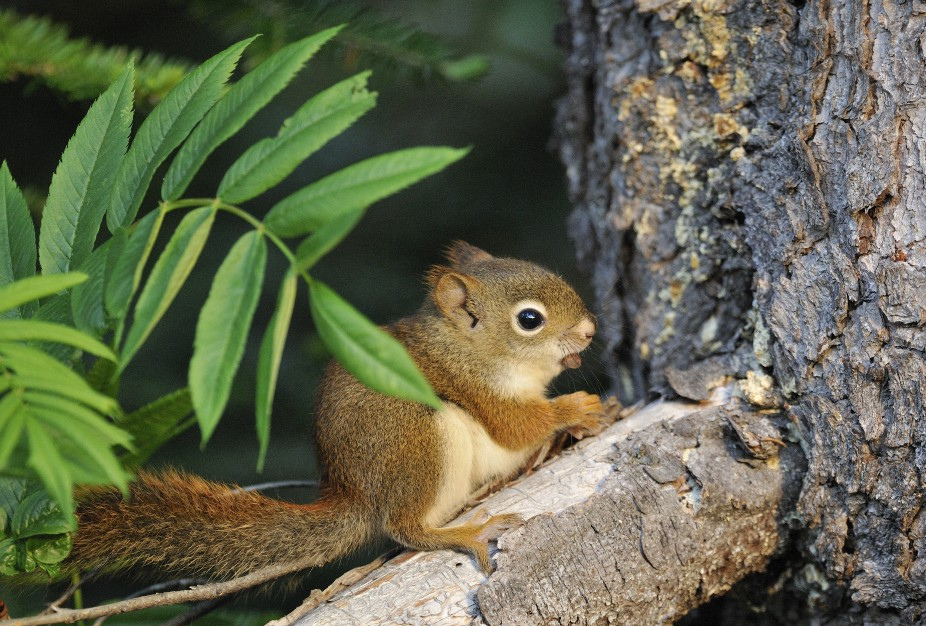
Photo of the Week - American Red Squirrel (ME)

Photo of the Week - 6/18/12

American Red Squirrel photographed at Kennebago Lake, ME.